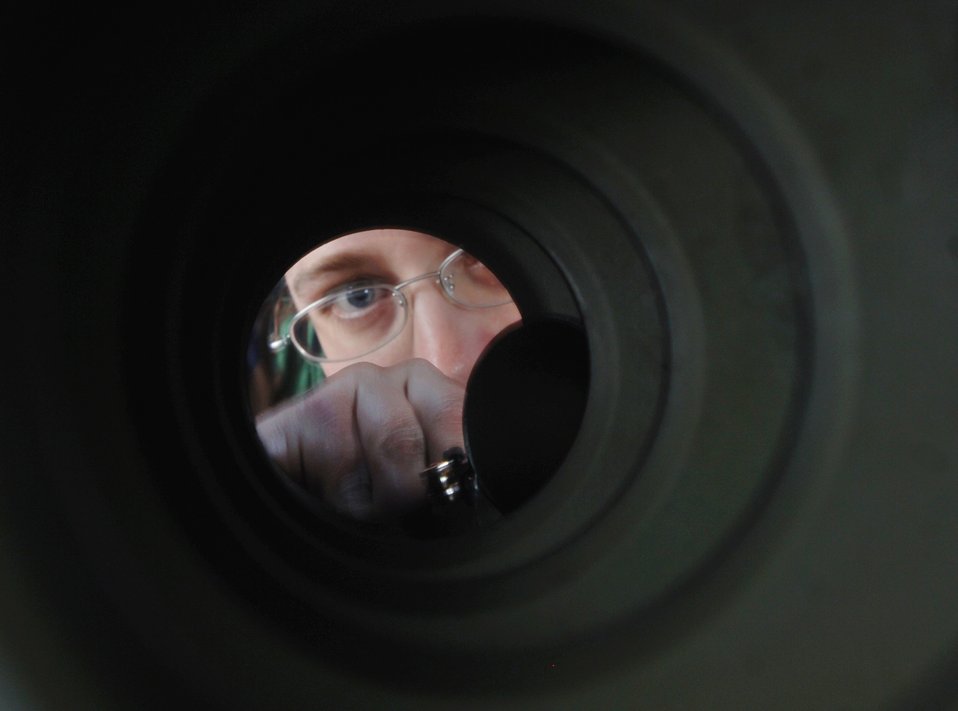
Herc check-up

Staff Sgt. Jason Barefield uses a mirror to check for corrosion, deformities and broken rivets inside a C-130 Hercules wing panel during an inspection at Yokota Air Base, Japan, on Tuesday, April 25, 2006. Sergeant Barefield is an aircraft mechanic with the 374th Maintenance Squadron.